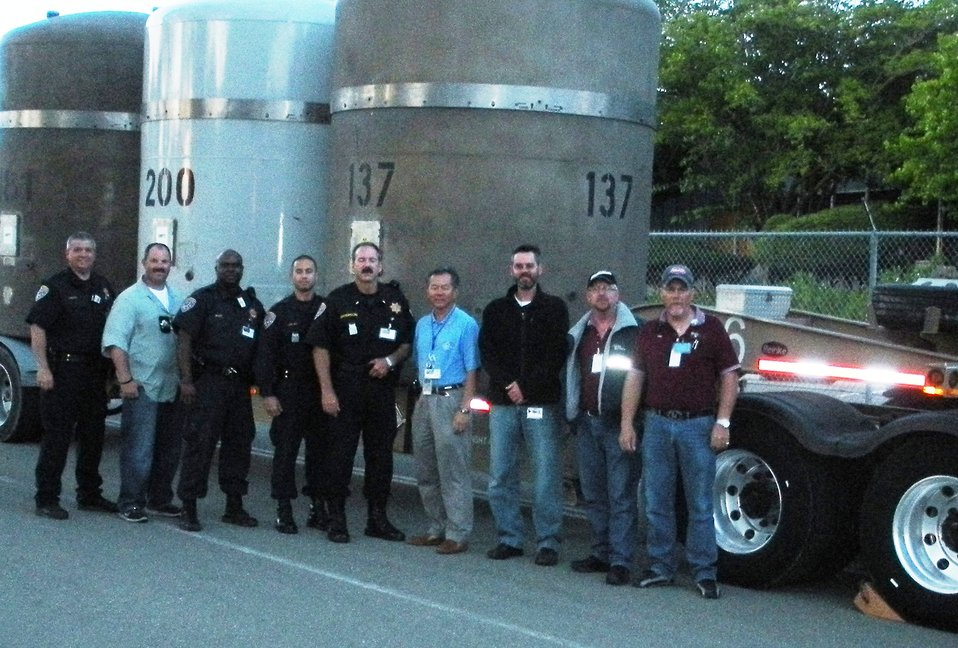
Recovery Act Leads to Cleanup of Transuranic Waste Sites